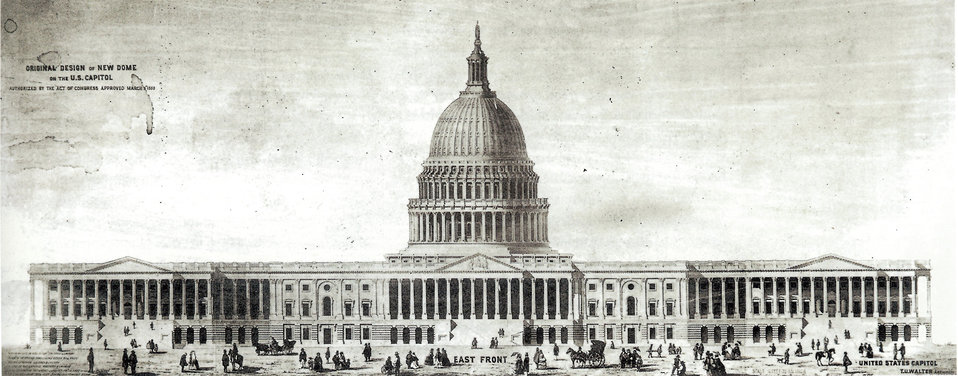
Thomas U. Walter's original design of the Capitol's cast-iron Dome

Design by Architect of the Capitol Thomas U. Walter in 1854.